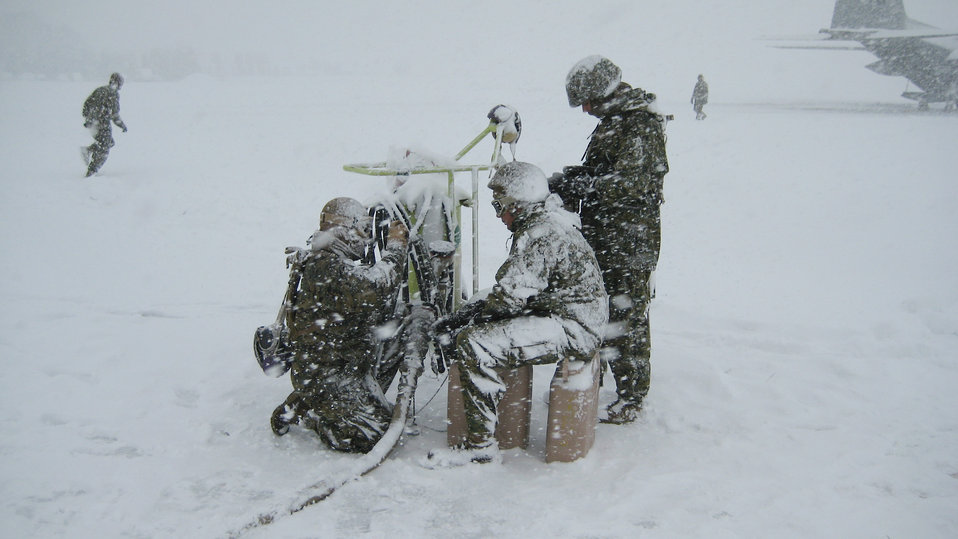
Forward area refueling point

Airmen assigned to the 374th Logistics Readiness Squadron Fuels Management Flight work with Marines at a forward area refueling point in support of humanitarian assistance and disaster relief efforts March 18, 2011, at Yamagata Airport, Japan.